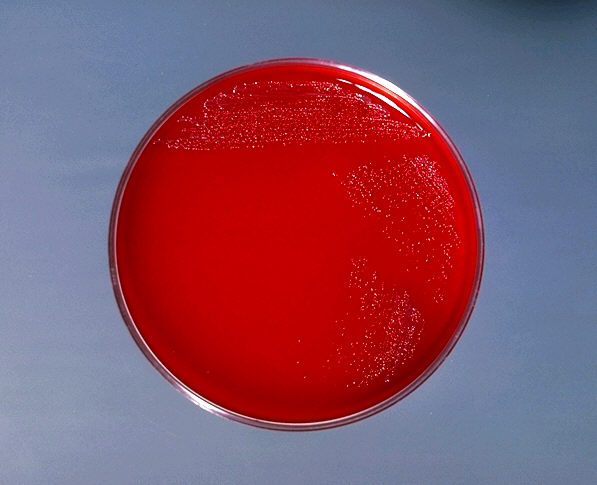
Blood agar plate culture of Corynebacterium minutissimum.